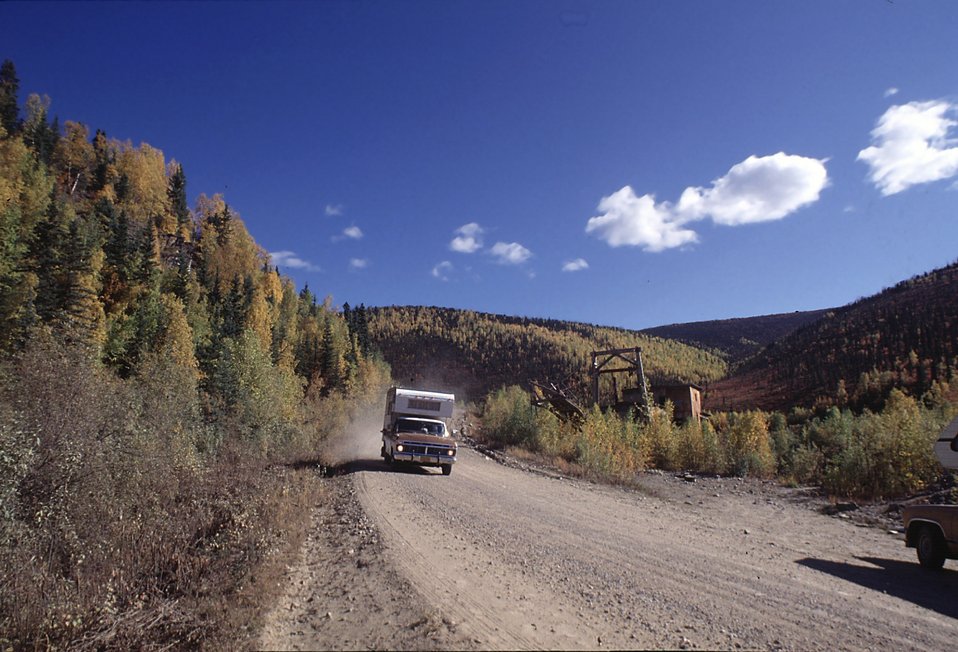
Fall colors along Taylor Highway near Jack Wade Dredge